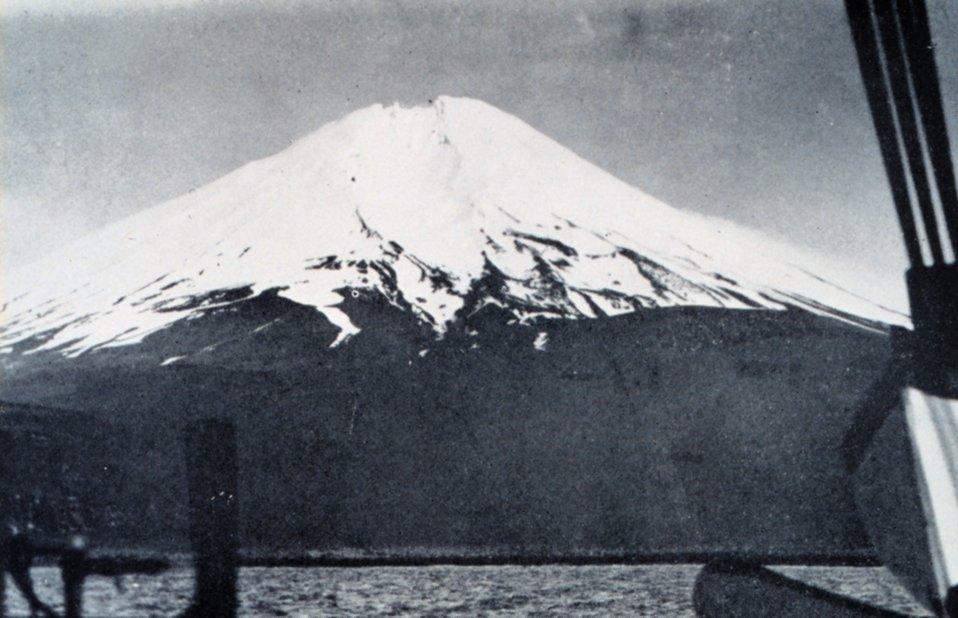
Mt. Vsevidov from the west showing a great blowout in its side.